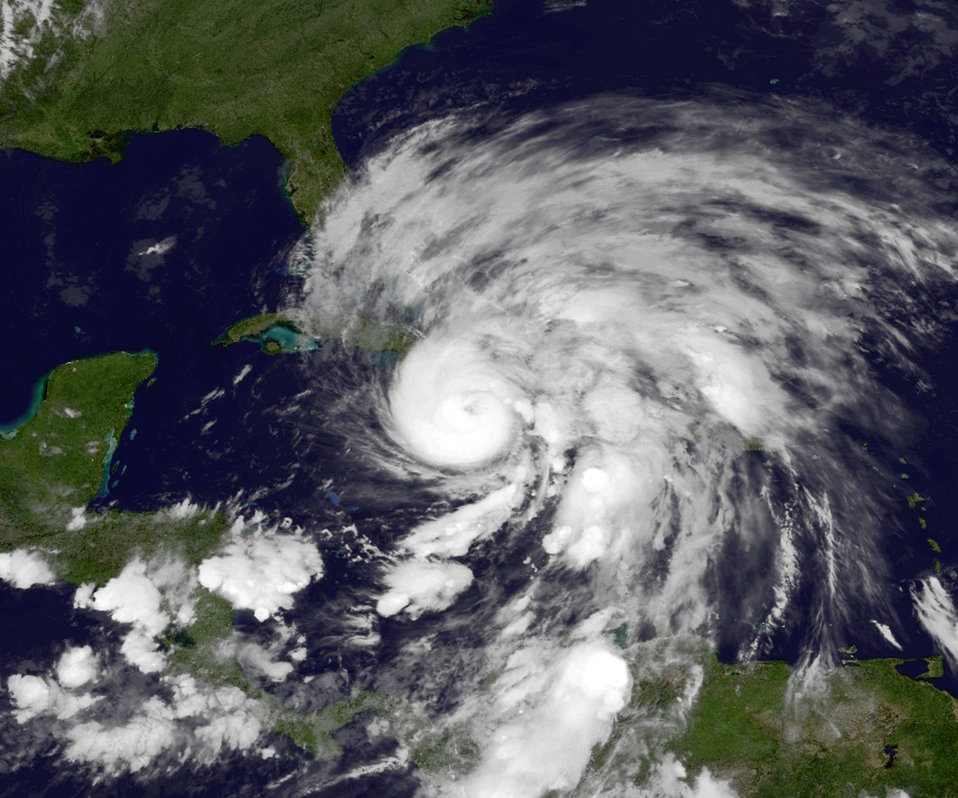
Hurricane Sandy